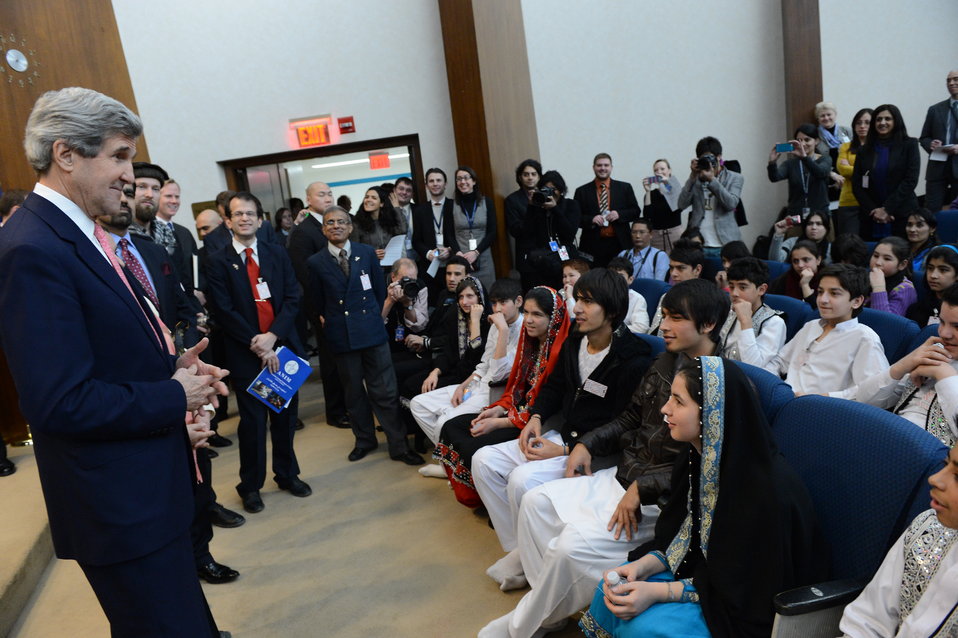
Secretary Kerry Chats With Young Afghan Musicians

U.S. Secretary of State John Kerry chats with young musicians from Afghanistan who gave a performance in the Dean Acheson Auditorium at the U.S. Department of State in Washington, D.C., on February 5, 2013. The young Afghan musicians are on a three-city cultural exchange tour of the United States sponsored by the U.S. Embassy in Kabul and the government of Afghanistan.